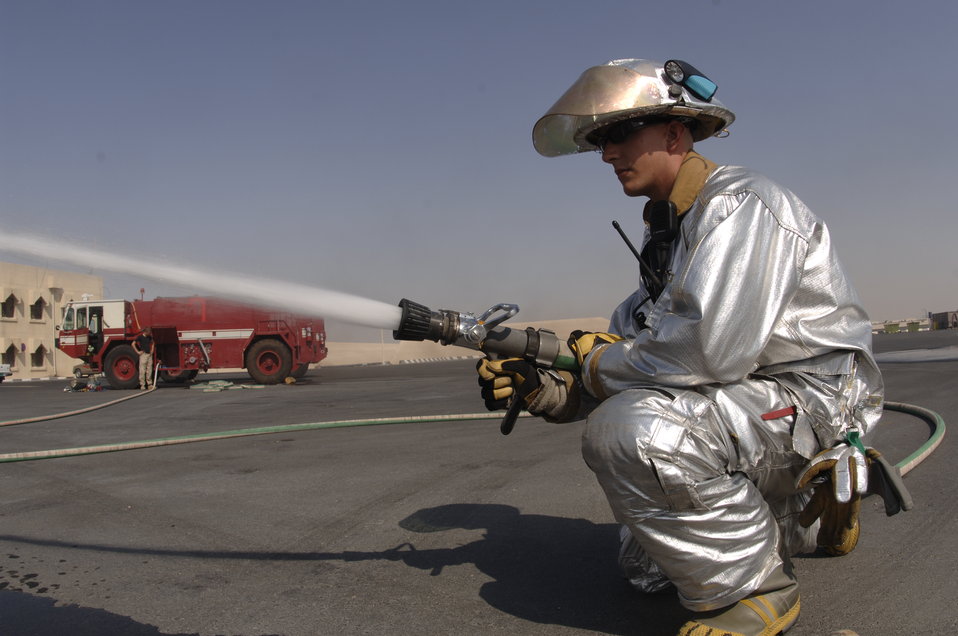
Deployment presents challenge for firefighters

Senior Airman Michael Pullman sprays water during a fire training exercise Oct. 5 in Southwest Asia. Airman Pullman is deployed to the 379th Air Expeditionary Fire Department.